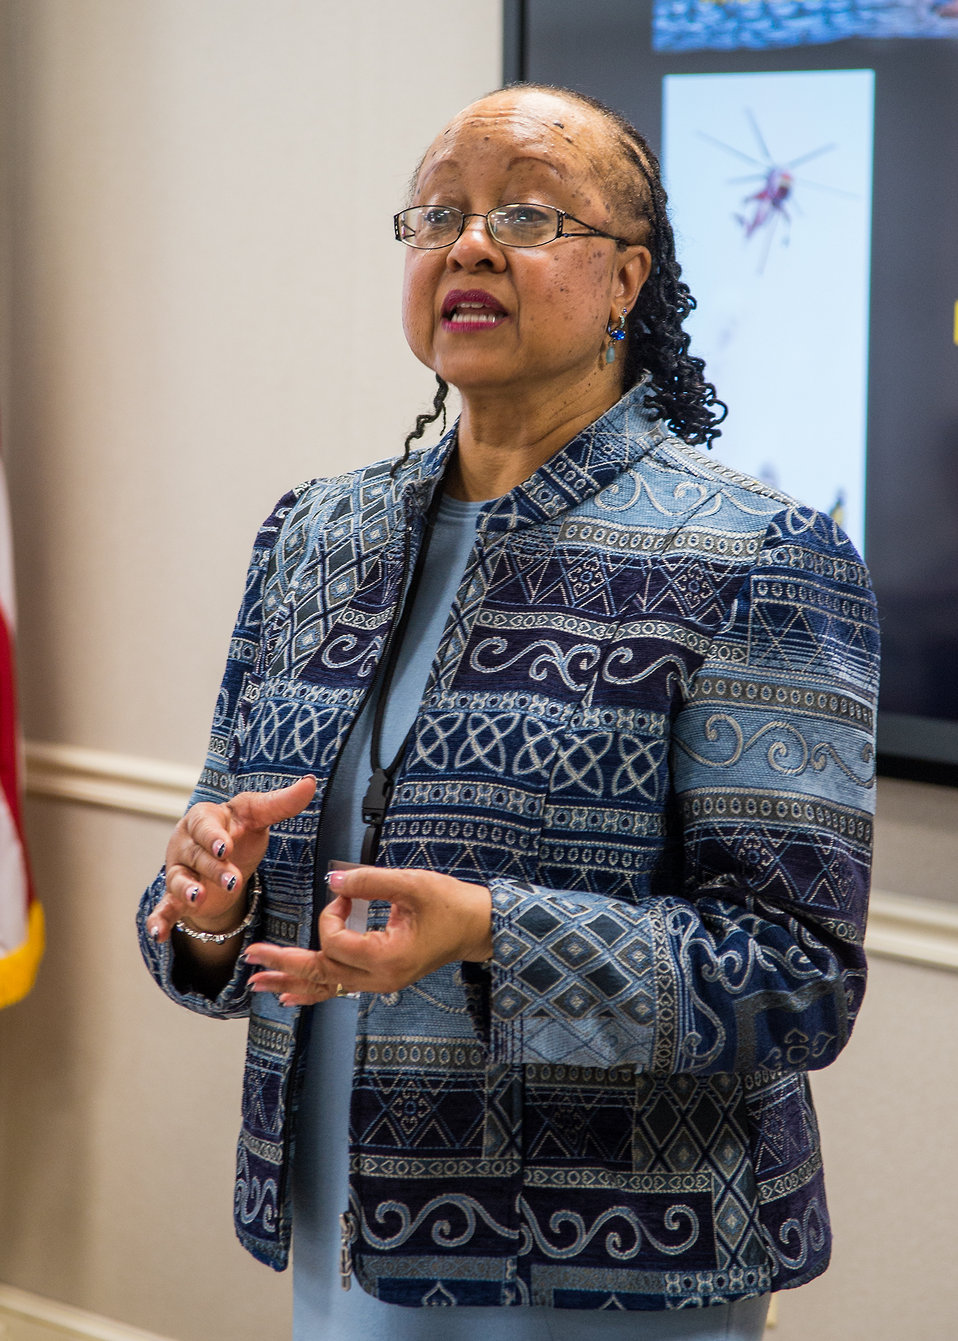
Joyce Hunter, Deputy Chief Information Officer welcomes Thomas Jefferson High School of Science and Technology students tothe U.S. Department of Agriculture (USDA), Office of the Chief Information Officer (OCIO) IT Job Shadow Day, Tuesday, Mar. 25, 2014. The OCIO IT Job Shadow Day hosts students from local high schools in the Washington, D.C. area annually with IT professionals and agricultural specialists from a variety of mission areas at USDA.